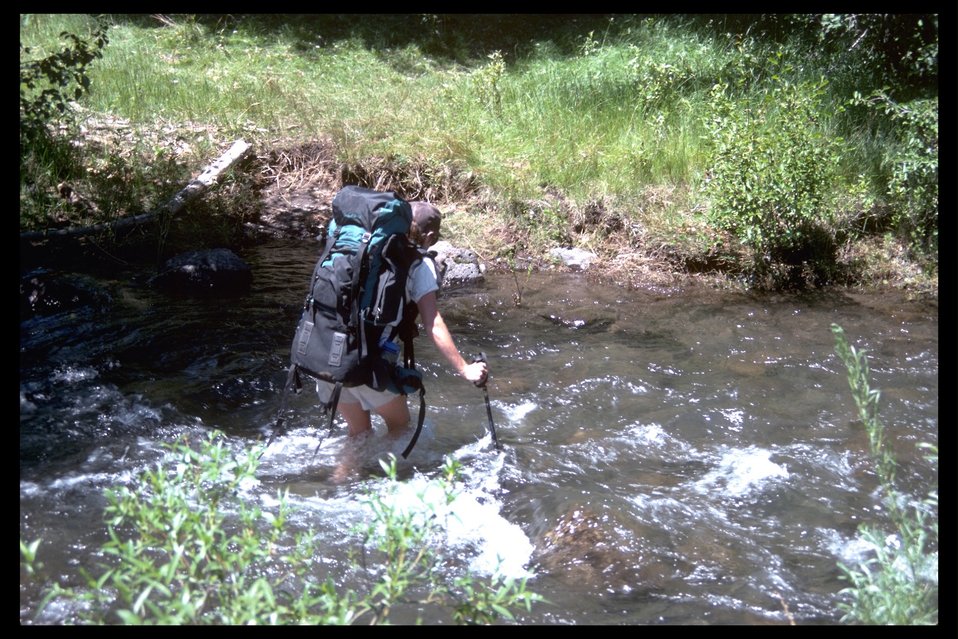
Little Blitzen Gorge WSA with Mary Emerick crossing the Little Blitzen River. (WSA 2-86F)